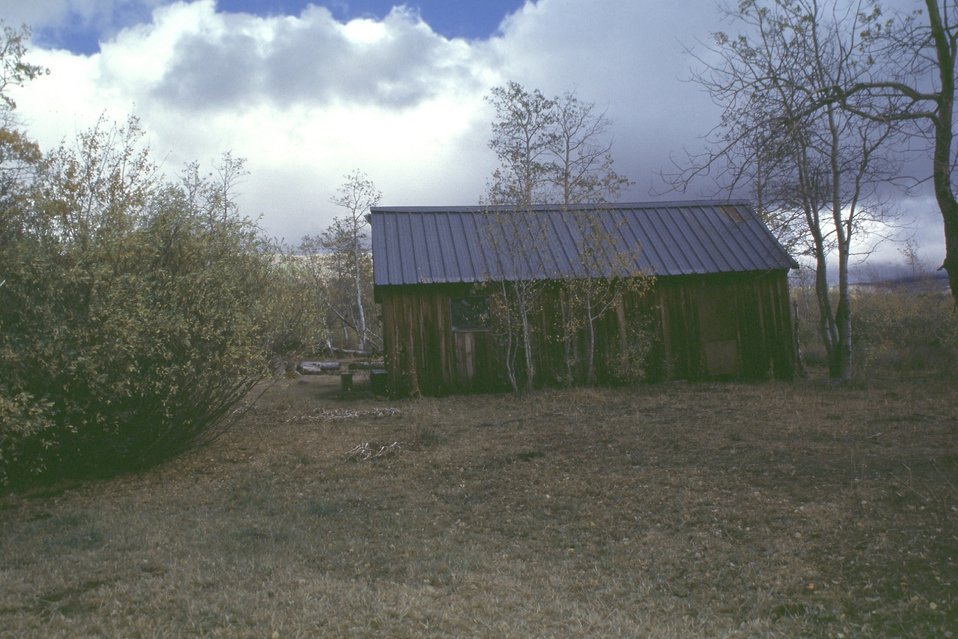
Nye Cabin, with a skull South side of the road looking east.